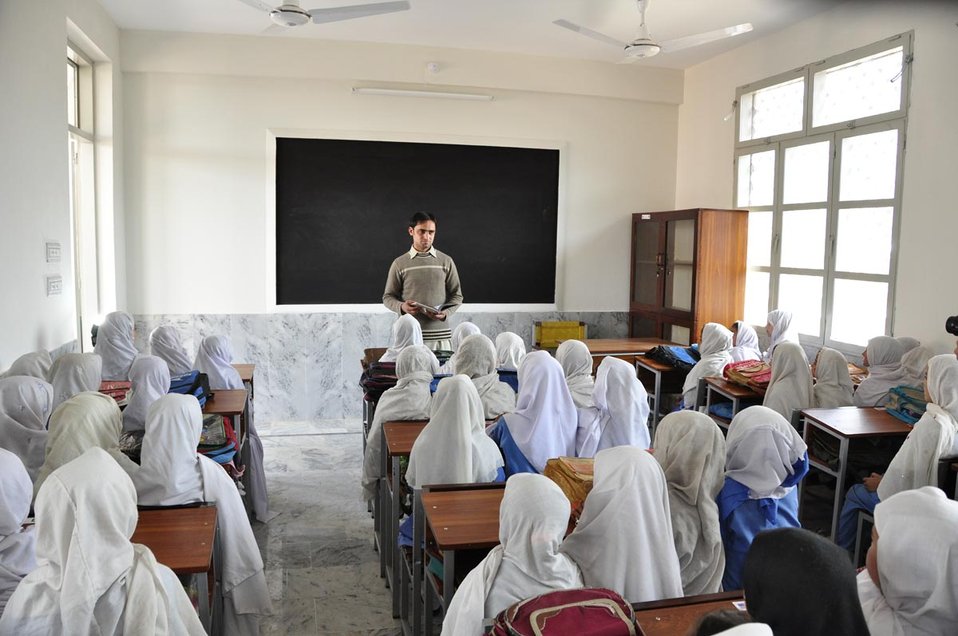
Buner School

Peshawar, March 14, 2012 - The Provincial Reconstruction, Rehabilitation and Settlement Authority (PaRRSA) handed over today to the KP Education Department the first of the 122 U.S. Government-sponsored schools at Torwarsak, Buner.